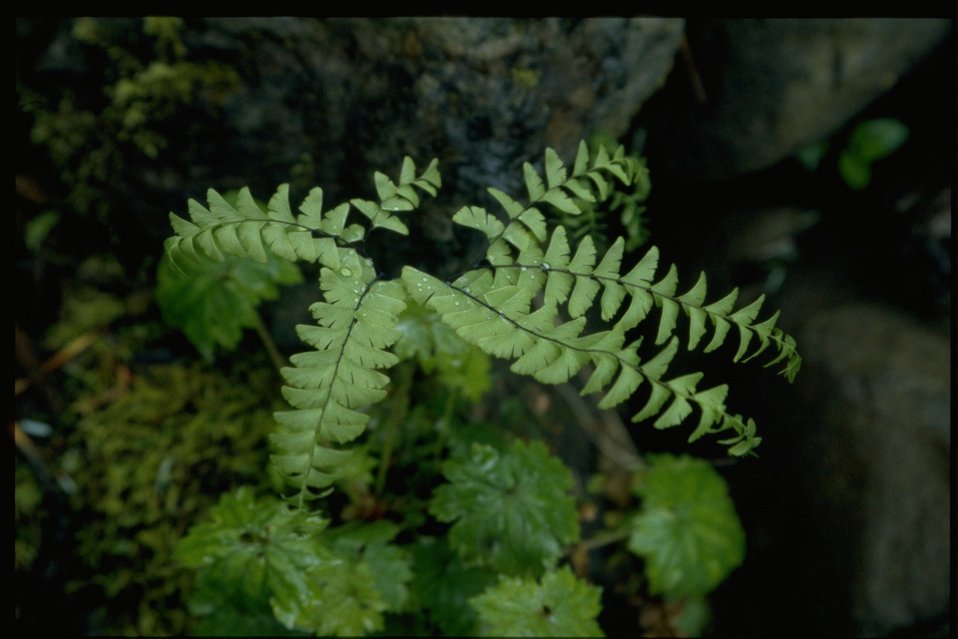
Medium shot of Adiantum aleuticum.